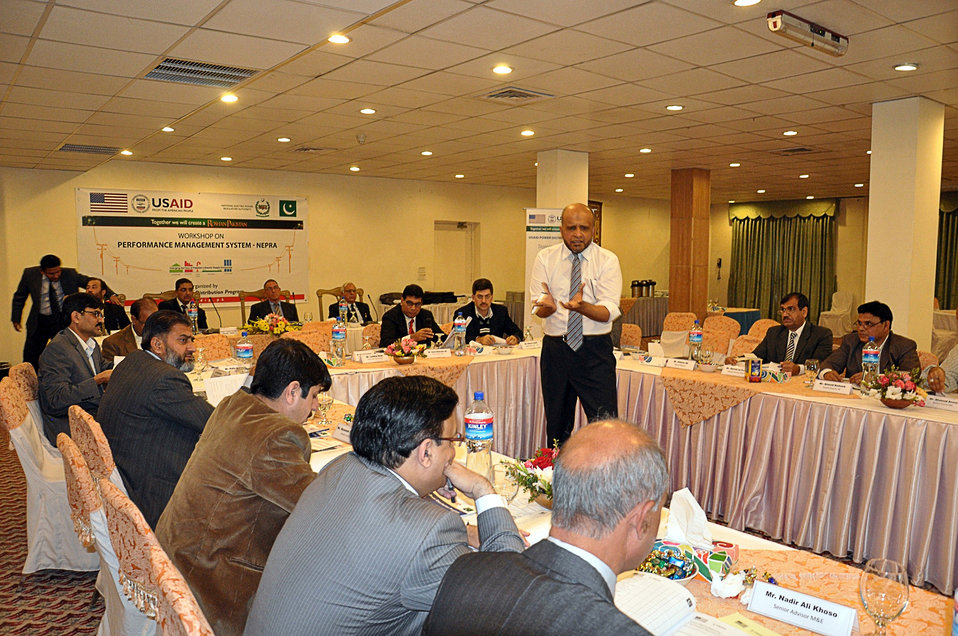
Performance Management Systems Workshop

CAPACITY BUILDING
“We really appreciate the efforts made by the USAID Power Distribution Program Team in conducting this effective workshop on Performance Management System. The workshop allowed National Electric Power Regulatory Authority (NEPRA) participants to understand modern practices in performance management systems. The practices and tools shared during the workshop are really helpful and will pave the way for implementing a new performance measurement system at NEPRA.”
National Electric Power Regulatory Authority Director General HR/A
Malik Hammad Shamimi

(Picture Above) Performance Management Systems Workshop: As part of its Organizational Assessment & Restructuring Project, the USAID Power Distribution Program carried out an extensive assessment of the existing performance measurement process, tools and aligned guidelines which are currently being applied by NEPRA. The existing mechanism lacks the capacity to incorporate and establish measurable objectives of an individual. There is an absence of performance planning. Employees are neither being measured on the value of their work nor on their competence, but rather on non-tangible attributes, and a proper mechanism to provide feedback and review mechanisms is lacking.